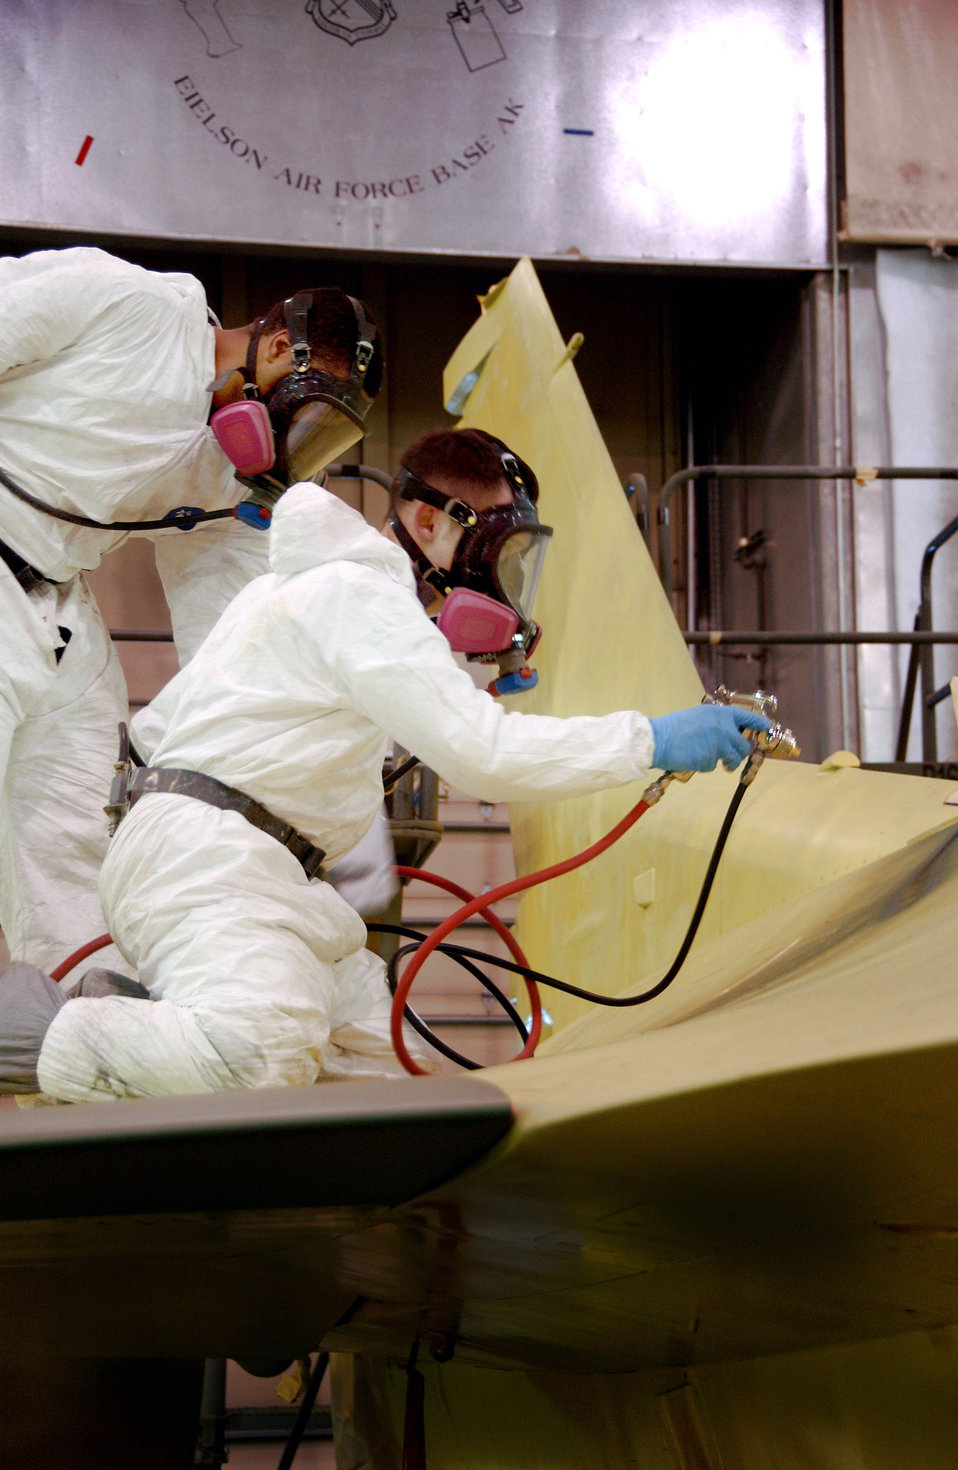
Fresh Coat For New Beginning

Senior Airman Frank Reardon and Airman 1st Class Eric Rickards paint an F-16 Fighting Falcon Feb. 14 at the corrosion facility. With the swap of the F-16s from Kunsan Air Base, South Korea, to Eielson AFB in support of their new mission as aggressors, each aircraft is applied with a scheme being Arctic Flanker, Blue Flanker or a Lizard Flanker. Airmen Reardon and Rickards are 354th Maintenance Squadron sheet metal workers.